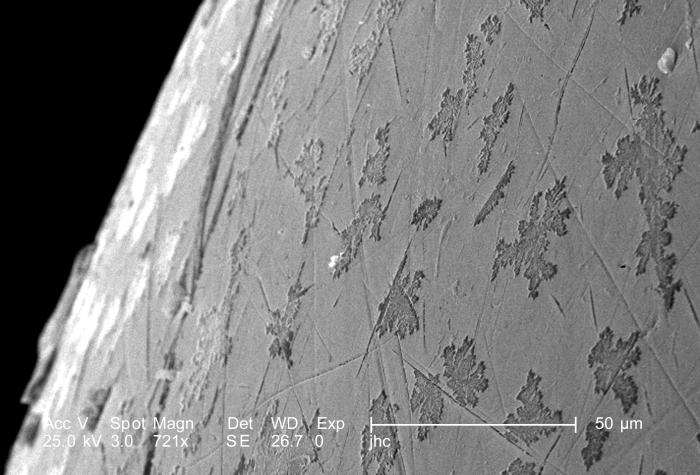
Magnified 721X, this scanning electron micrograph (SEM) revealed some of the ultrastructural details found on the surface of one of the two eyes of this adult 'figeater' beetle, Cotinis mutabilis. The meaning behind the 'leaf-like' pattern seen on the eye's chitinous surface is unknown, however, when carefully scrutinized, it does not appear to be randomized. Note PHIL 9951 and 9952 for other views of this configuration.